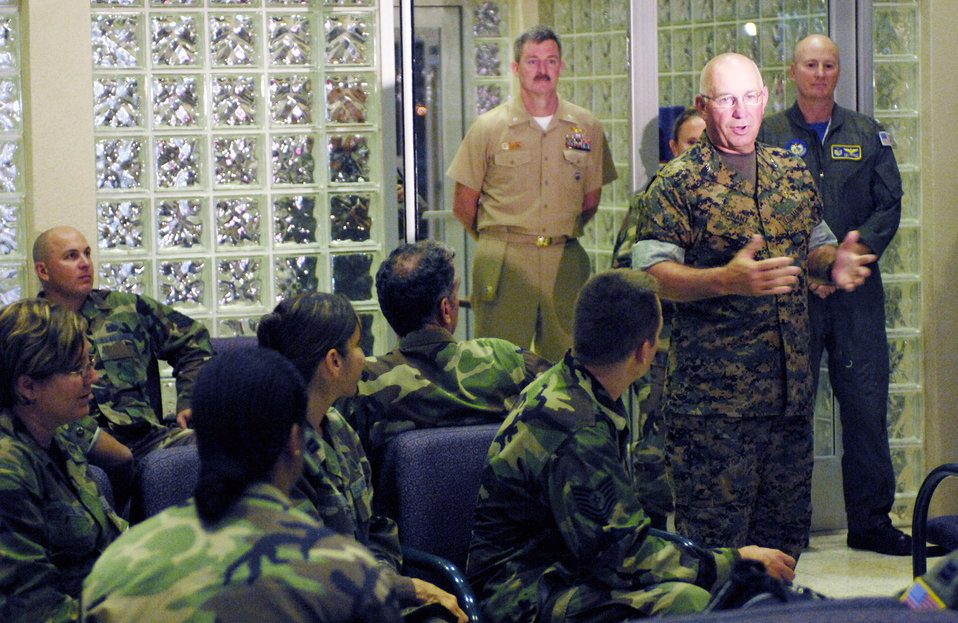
Medics on the move

Marine Maj. Gen. Thomas Conant speaks to medics prior to them leaving for a humanitarian mission July 20 at the passenger terminal on Hickam Air Force Base, Hawaii. Approximately 50 Airmen, Soldiers and Sailors will travel to Vanuatu, Kiribati and Nauru to provide medical, dental and engineering support to the residents of the Pacific islands. General Conant is the U.S. Pacific Command director for strategic planning and policy.